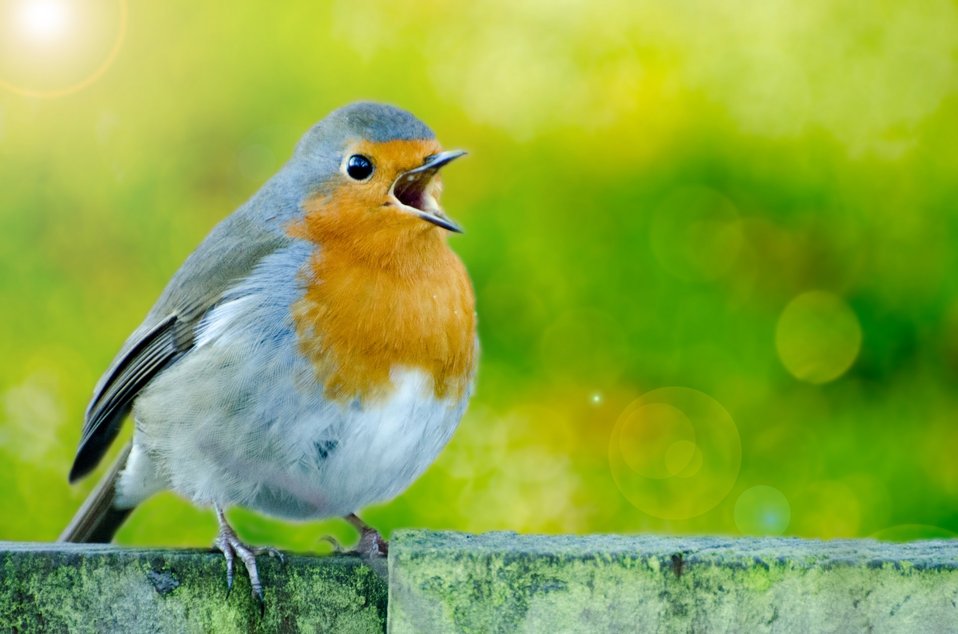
Animal

Robin - animal.